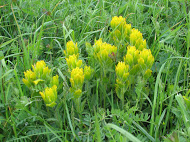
Golden paintbrush

Scientific name: Castilleja levisecta
Status: Threatened